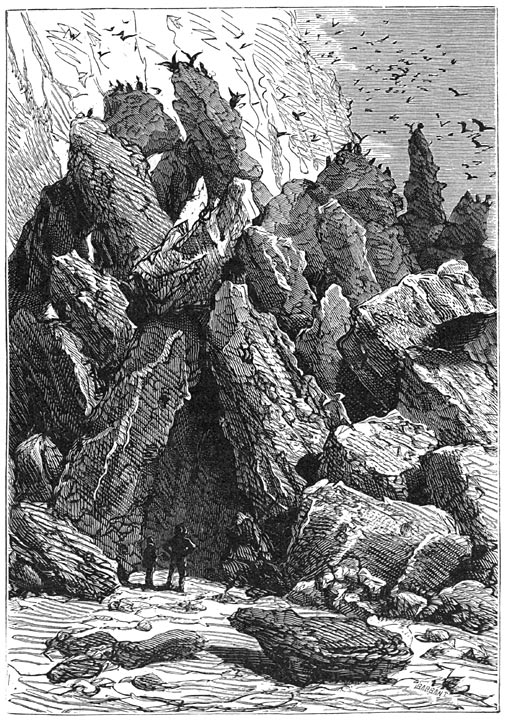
An illustration from Jules Verne's novel 'The Mysterious Island' (1873-74) drawn by Jules Férat. Polski: Ilustracja powieści Juliusza Verne'a 'Tajemnicza wyspa' (tytuł przekładany także jako: Wyspa tajemnicza, 1873-74) autorstwa Julesa Férata. Français : Jules Verne: 'L’Île mystérieuse' (1873-74), dessins par Jules Férat. Orginal description from the book: Français : Les éboulis avaient formé un entassement de rochers.